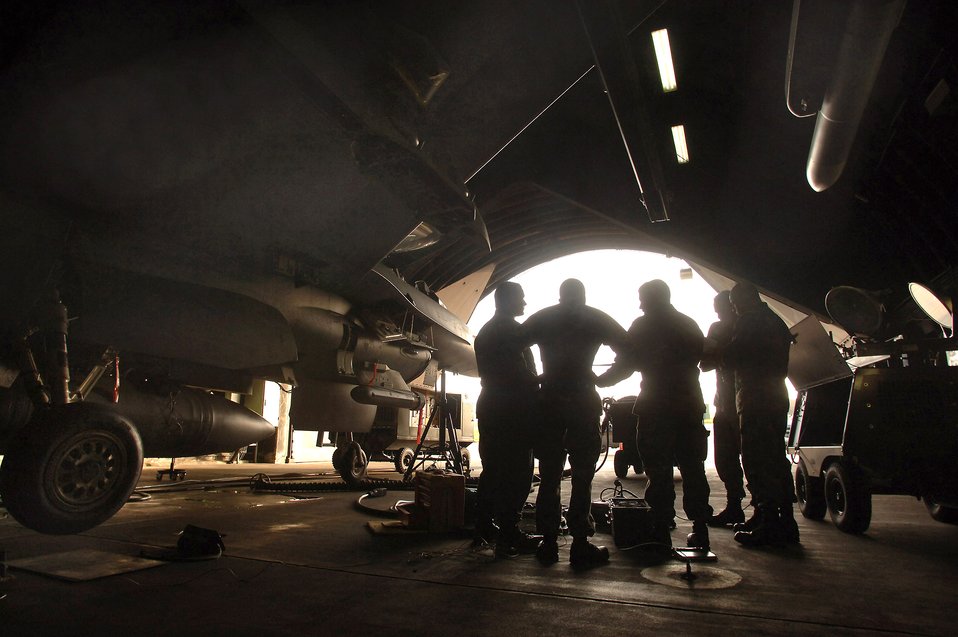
Let's talk

Avionics technicians assigned to the 23rd Aircraft Maintenance Unit at Spangdahlem Air Base, Germany, discuss repairs on an F-16 Fighting Falcon that experienced an in-flight malfunction Aug. 29. Avionics specialists must be familiar with nearly 40 separate avionics systems that are built into the multi-role fighter.